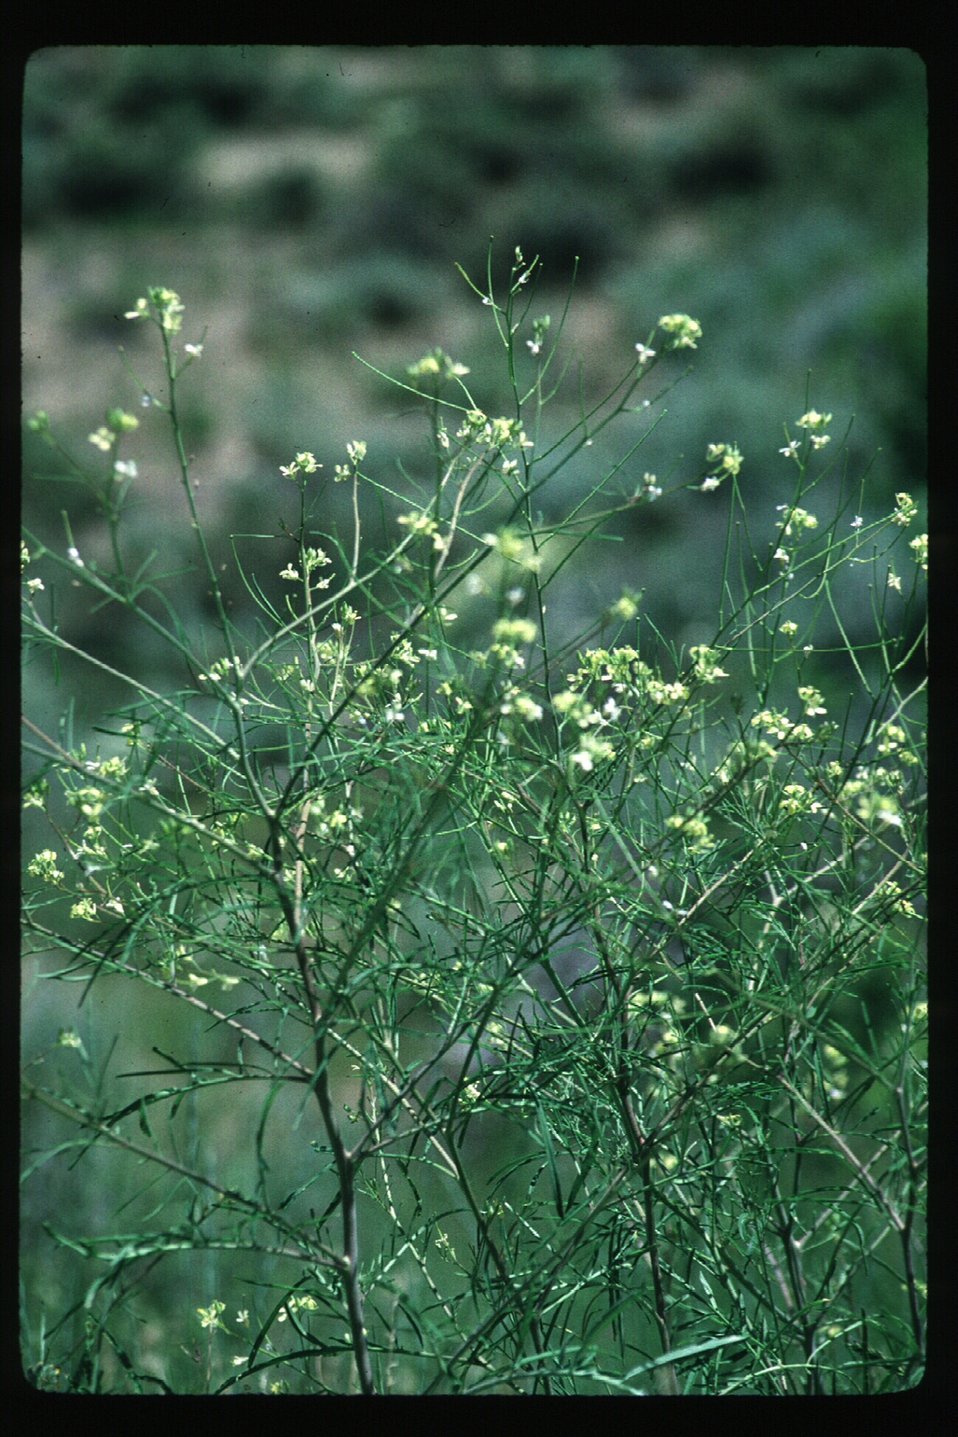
Rocky Canyon Boise Foothills Four Rivers Field Office LSRD Lower Snake River District